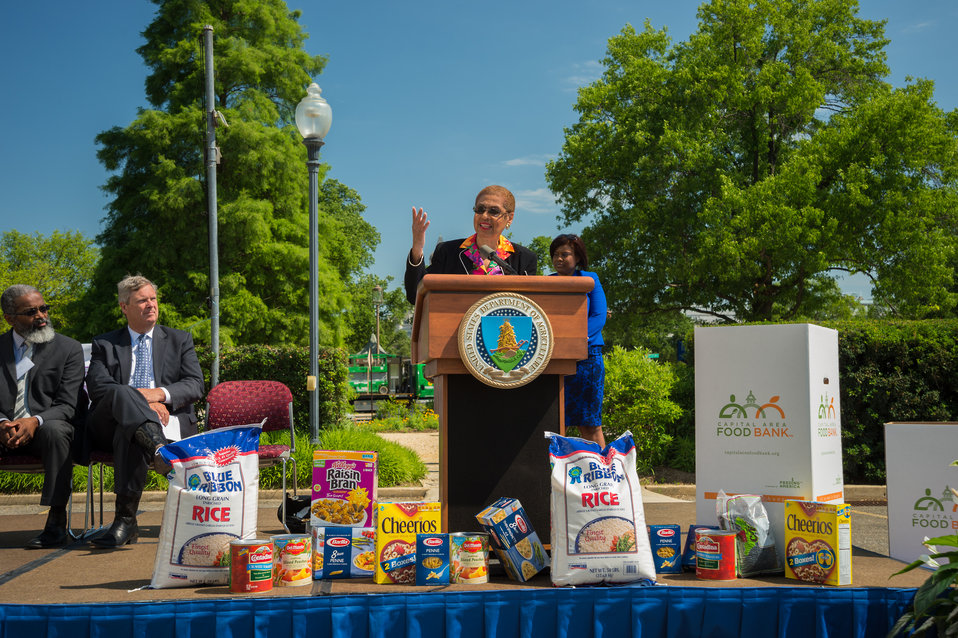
Congresswoman Eleanor Holmes Norton thanked Federal employees for their dedication to helping those in need by donating food during the 2014 National Feds Feed Families Campaign at the United States Department of Agriculture’s (USDA’s) People’s Garden in Washington, DC, Mon. Jun. 2, 2014. The theme of this year’s event is, “Help Knock Out Hunger.” The U.S. Department of Agriculture will lead the campaign with the support of the Chief Human Capital Officers Council and other agency partners, which officially begins on June 1 and will run through August 27, 2014. On stage behind Congresswoman Norton are Dr. Gregory Parham, Assistant Secretary for Administration and Agriculture Secretary Tom Vilsack.